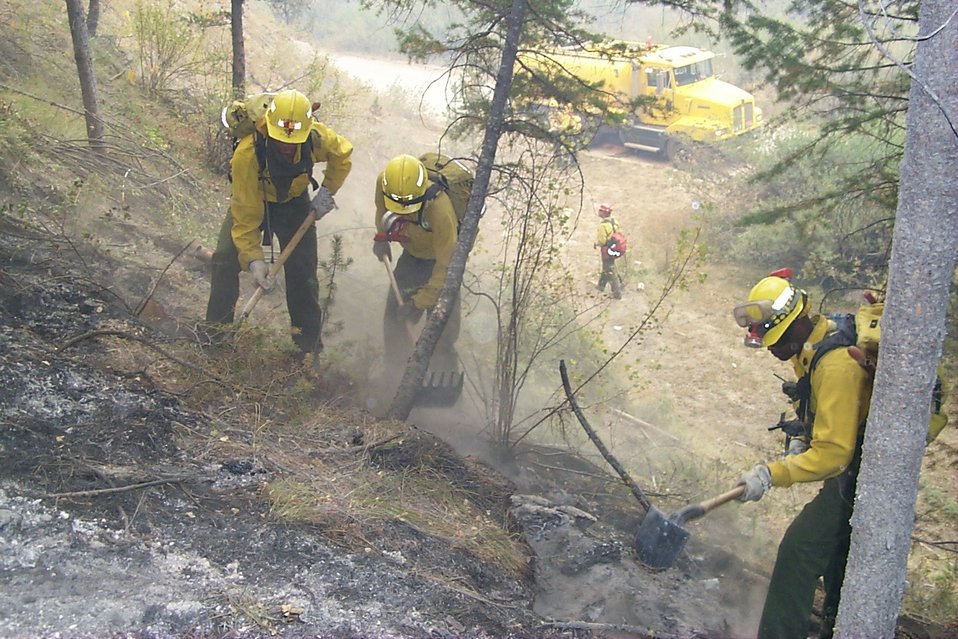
Line crew Fire Clearwater Fire Salmon Field Office USRD Upper Snake River District